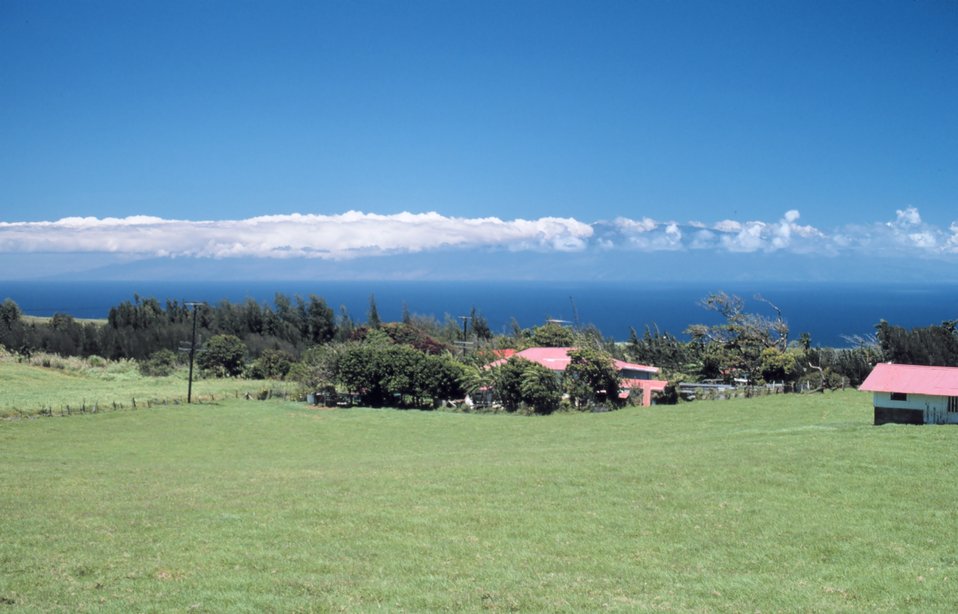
Looking across to Maui from the northwest tip of Hawaii.